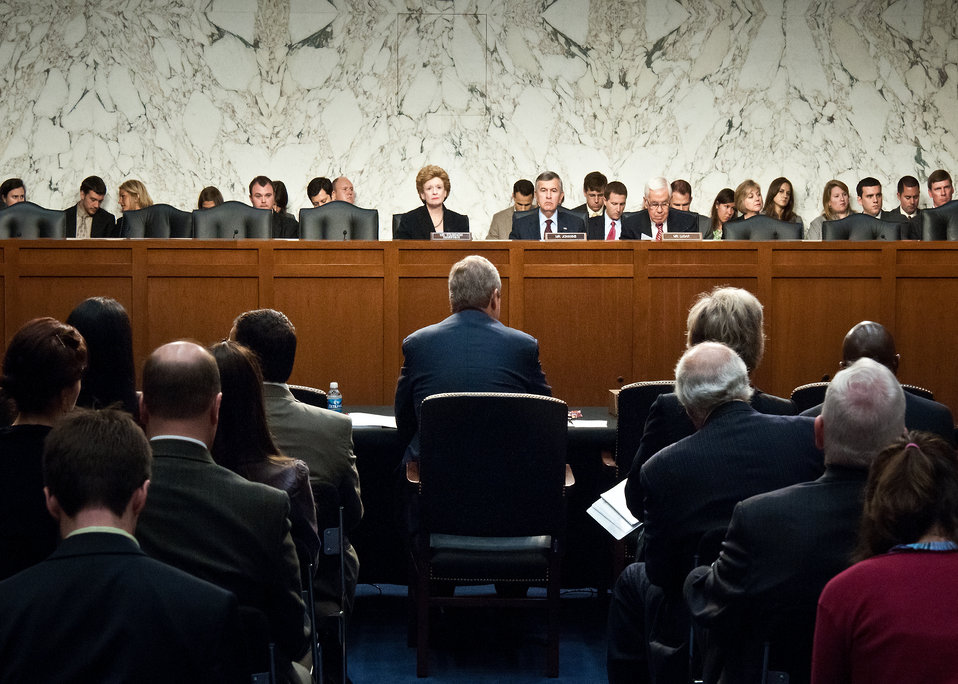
Agriculture Secretary Tom Vilsack spoke before the Senate Committee on Agriculture, Nutrition and Forestry, Thursday, May 26, 2011. Secretary Vilsack mentioned that, “… America’s farmers … also have a role in feeding a growing world population. They do this not only through historic productivity and record exports, but through the development and embrace of new research, and innovative practices, technologies and institutional structures that can be shared with the rest of the world.”